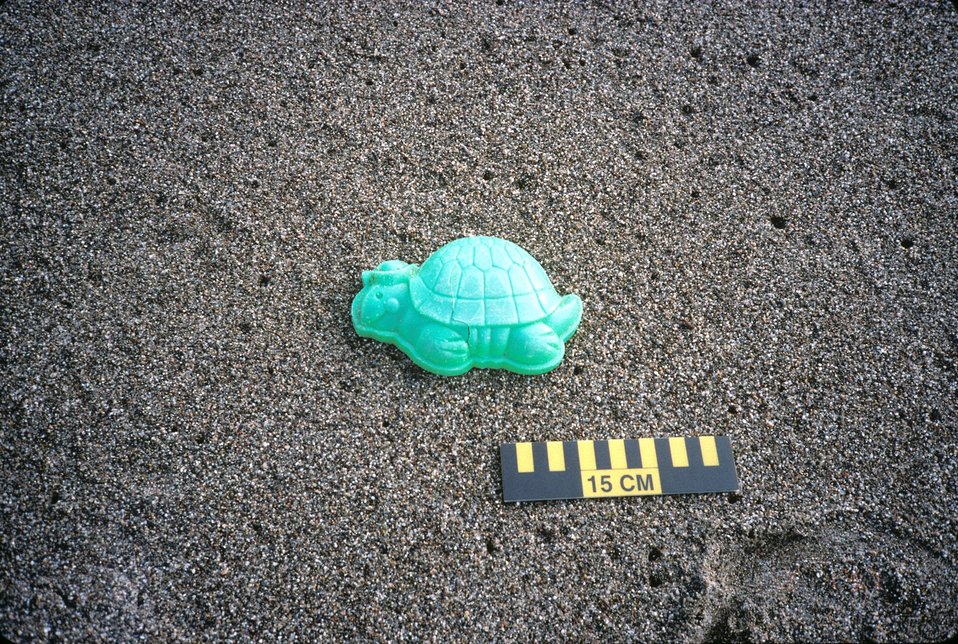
Point Reyes Great Beach south end. Marine debris - a small plastic turtle which looks cute but is part of a growing ocean-wide problem of plastic debris in the ocean.